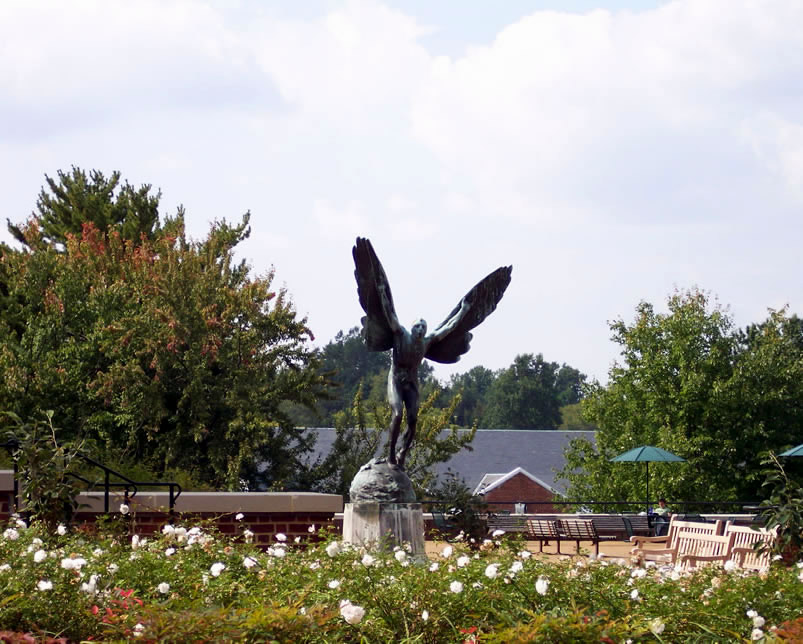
'The Aviator' (of 1919) by Gutzon Borglum